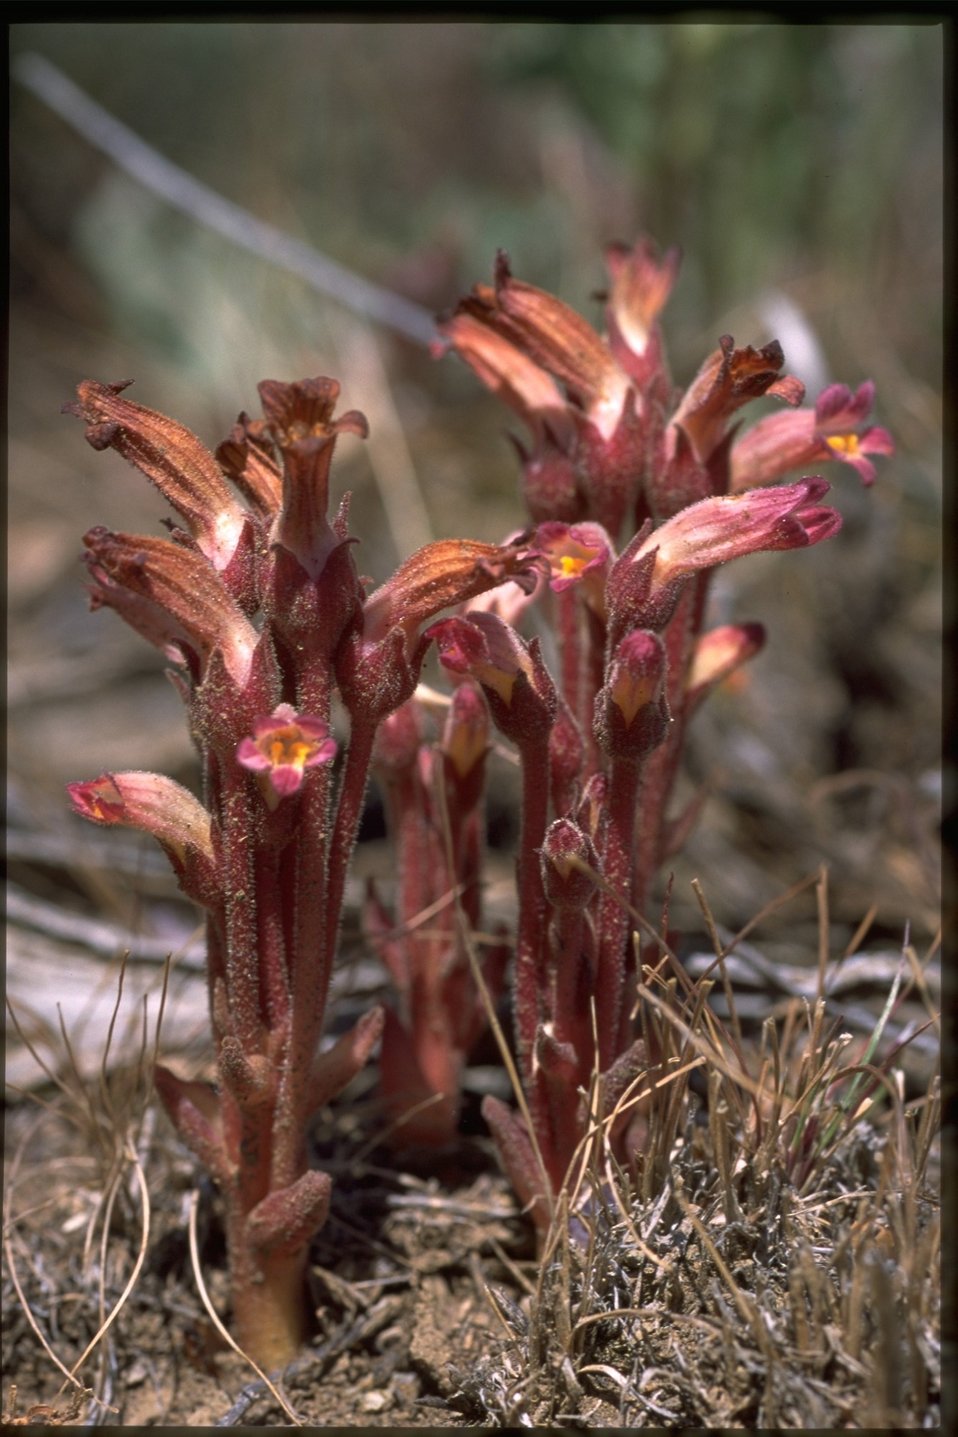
Medium shot of Orobanche.